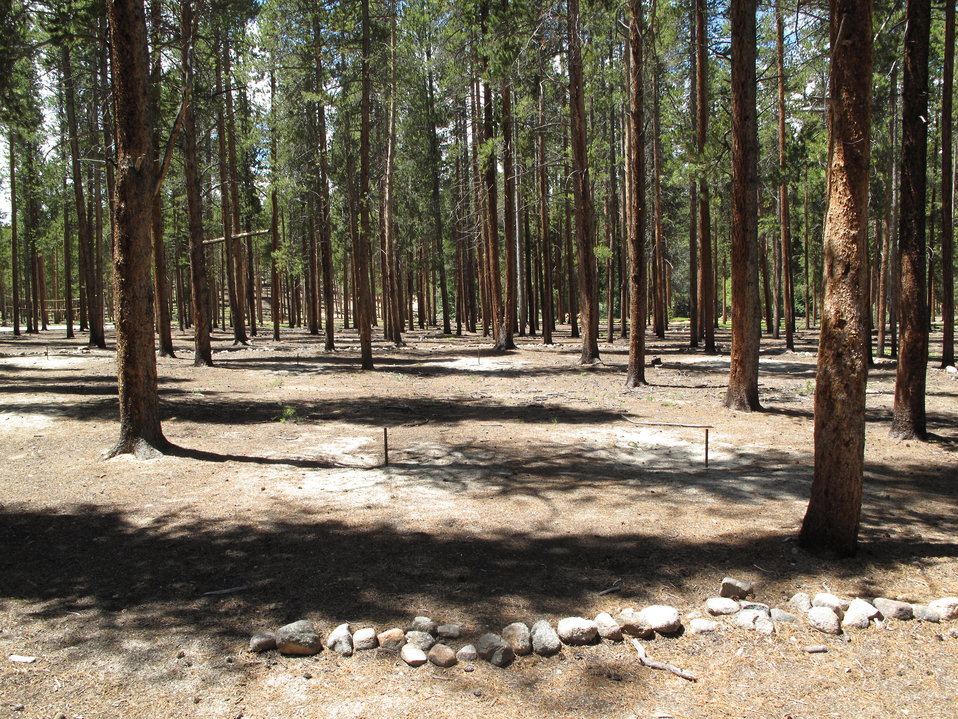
Leadville National Fish Hatchery

Halfway along the trail, a recreation area exists that contains a basketball court, volleyball net, picnic benches, restrooms, and grills.